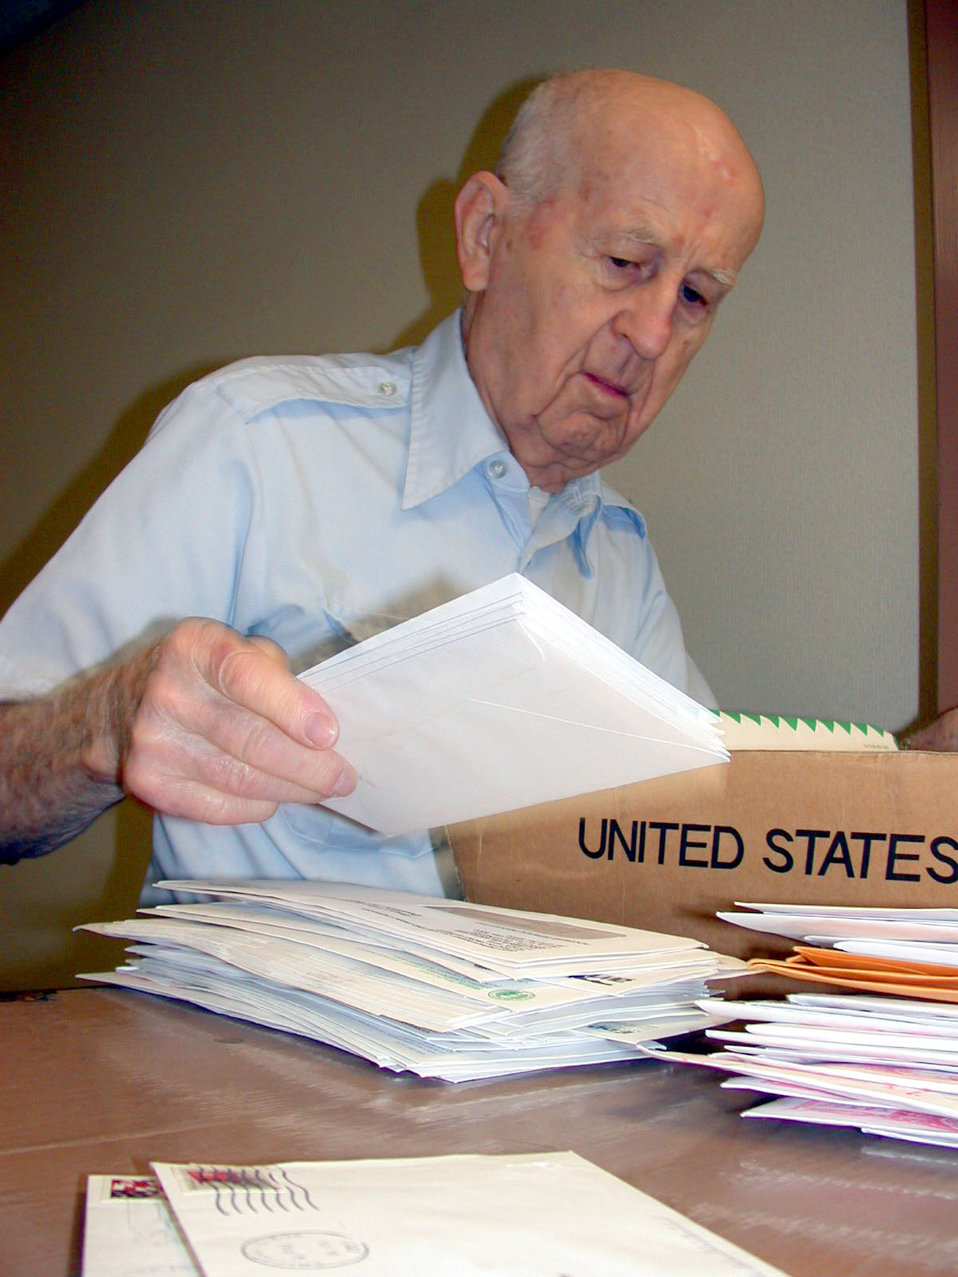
The mail must go through

RANDOLPH AIR FORCE BASE, Texas -- Martin